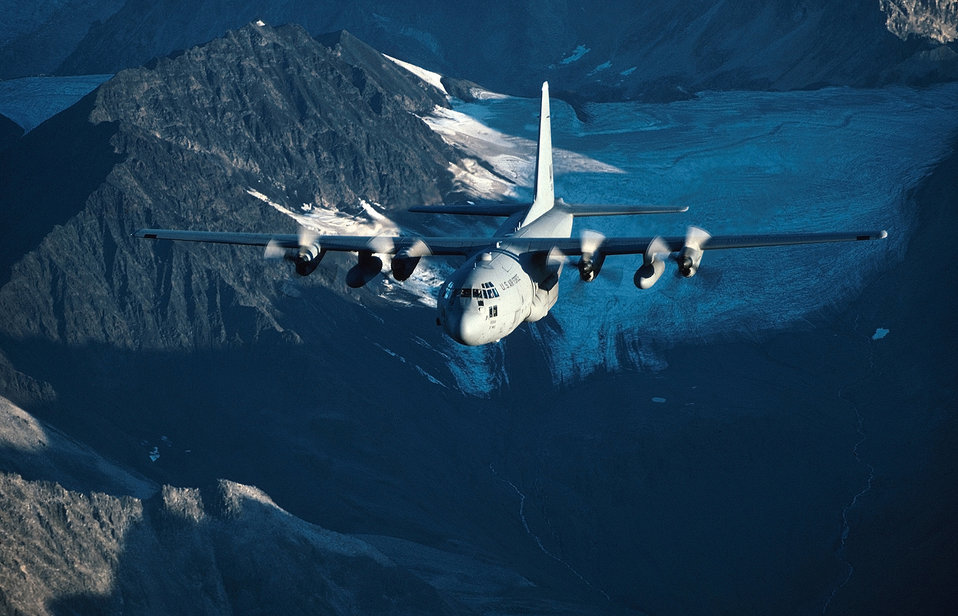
C-130

FILE PHOTO -- The C-130 Hercules primarily performs the tactical portion of the airlift mission. The aircraft is capable of operating from rough, dirt strips and is the prime transport for airdropping troops and equipment into hostile areas. C-130s operate throughout the U.S. Air Force, serving with Air Mobility Command, theater commands, Air National Guard and the Air Force Reserve Command, fulfilling a wide range of operational missions in both peace and war situations. Basic and specialized versions of the aircraft airframe perform a diverse number of roles, including airlift support, Arctic ice resupply, aeromedical missions, aerial spray missions, fire-fighting duties for the U.S. Forest Service and natural disaster relief missions.